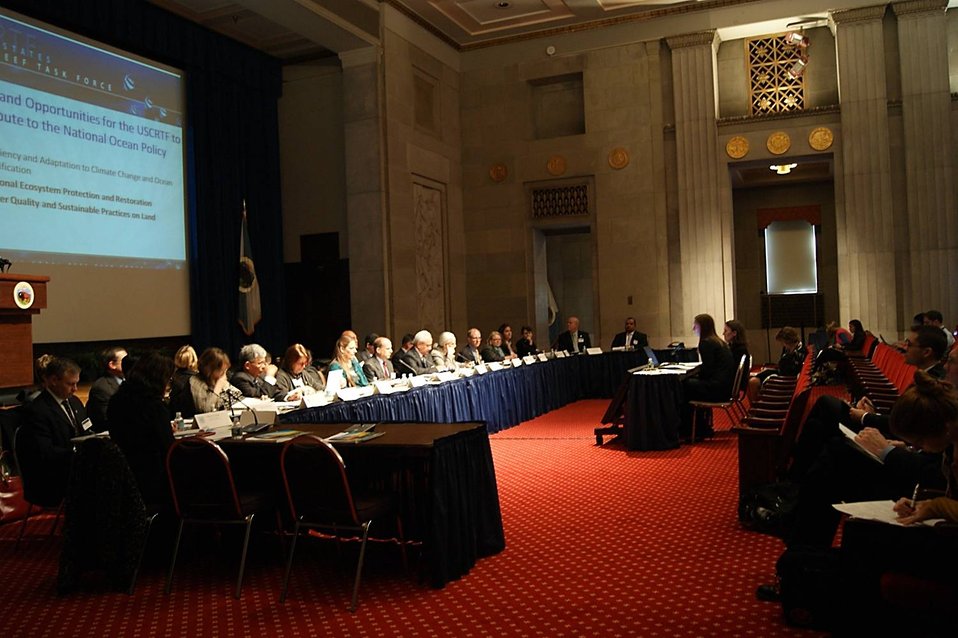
Coral Reef Task Force - Winter Meeting 2012